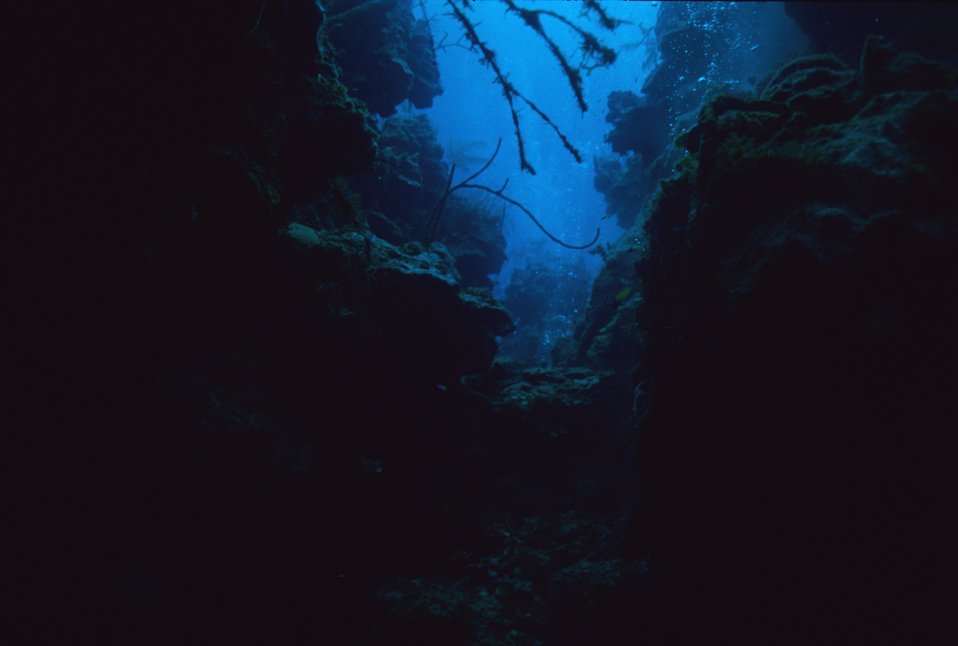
Reef scene